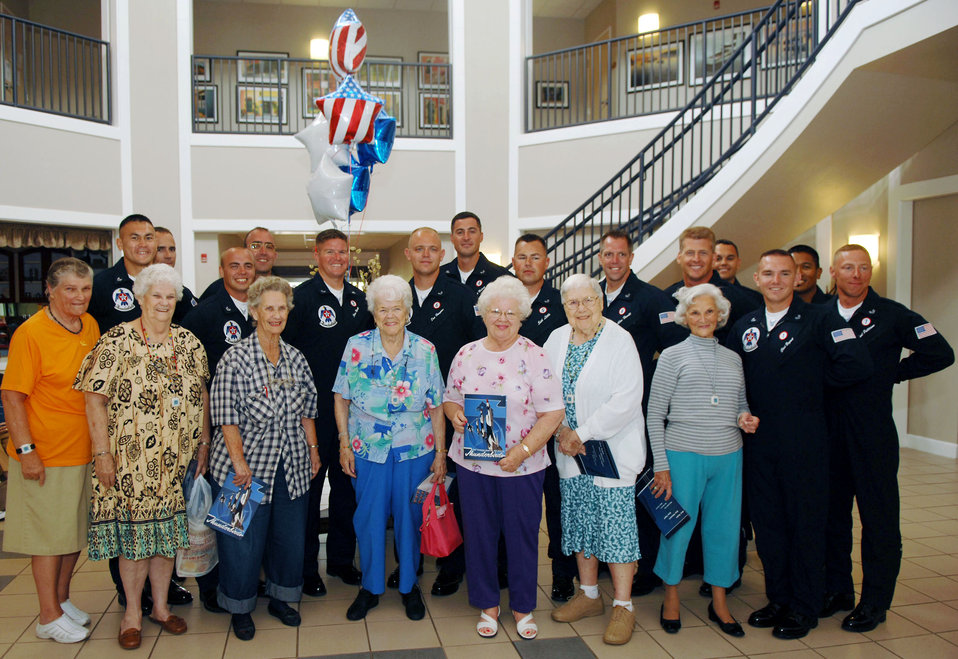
Thunderbirds' aircrew surprise widows at Enlisted Village

Aircrew members of the Thunderbirds, the Air Force's air demonstration team, visit with residents at Hawthorn House, the Air Force Enlisted Village's assisted living residence in Shalimar, Fla. When inclement weather caused the Eglin Air Show to be cancelled April 14, the Thunderbirds made a surprise visit to the Enlisted Village, a charity that provides a home for widows of enlisted servicemembers.